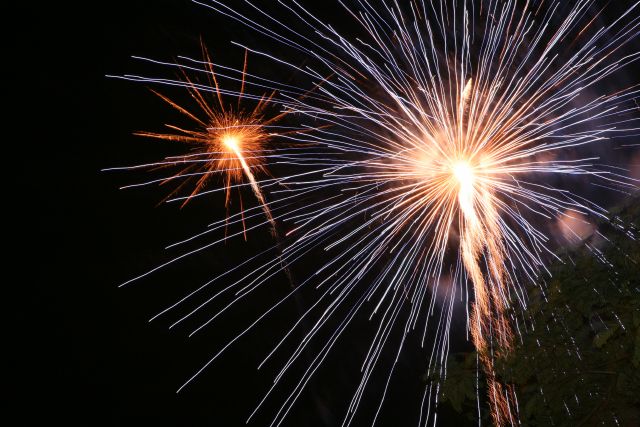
July 4th Celebration at U.S. Embassy in the Dominican Republic

Guests watch the fireworks display at the U.S. Independence Day celebration at the U.S. Embassy Santa Domingo in Dominican Republic at the Chief of Mission's Residence on July 2, 2010.